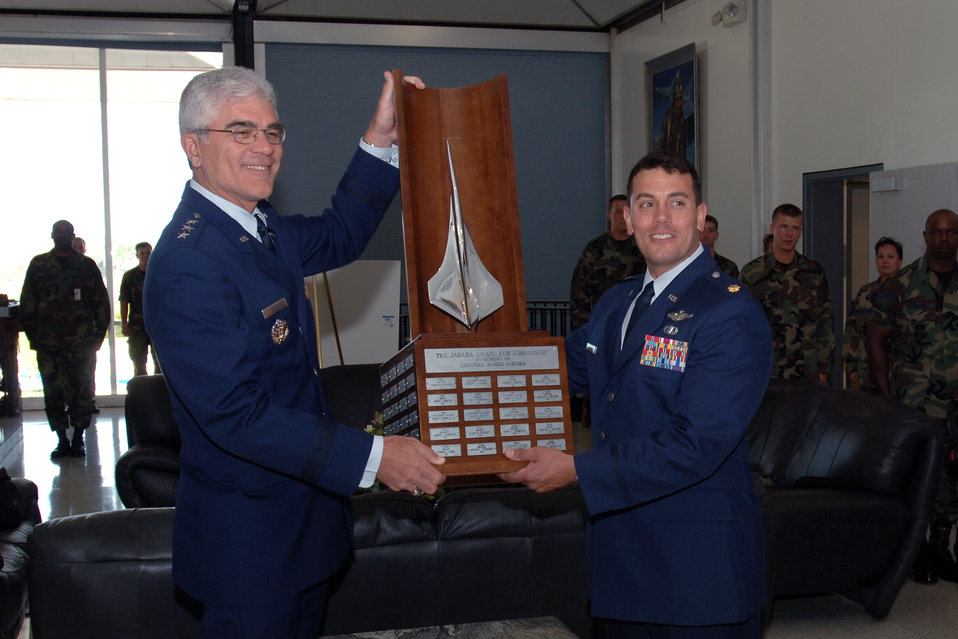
'93 grad honored with Jabara award

Maj. Mark W. Visconi, right, receives the 2007 Col. James Jabara Award for Airmanship May 11 from Lt. Gen. John F. Regni, U.S. Air Force Academy superintendent, at the academy's Mitchell Hall dining facility. The Jabara Award for Airmanship is awarded each year to the U.S. Air Force Academy graduate whose accomplishments demonstrate superior performance in fields directly involved with aerospace vehicles.